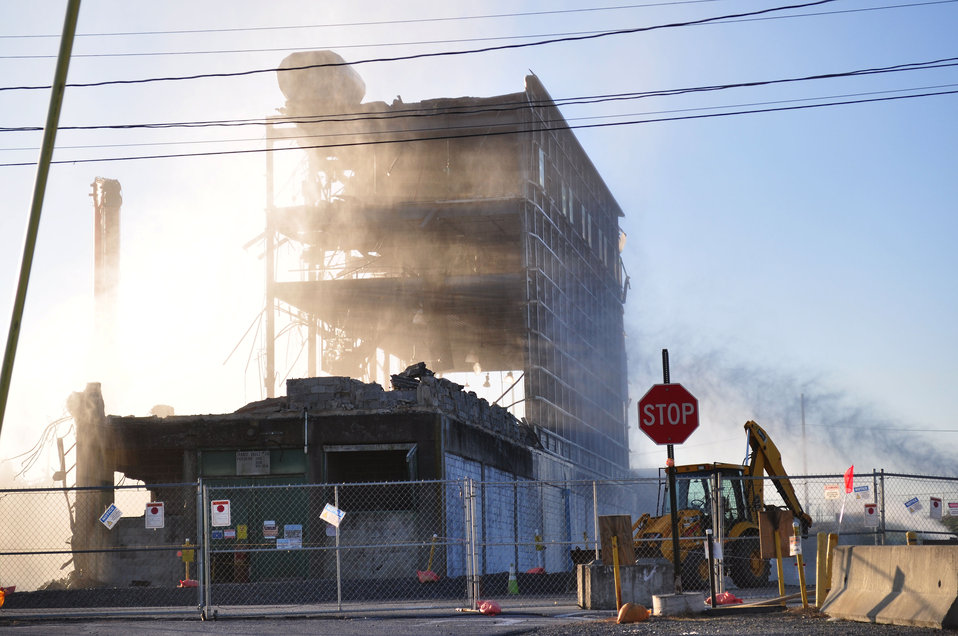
DandD of K-25 North Tower

13-005 DOE photo Lynn Freeny 1-23-2013 ETTP North Tower K-25 Oak Ridge Tennessee